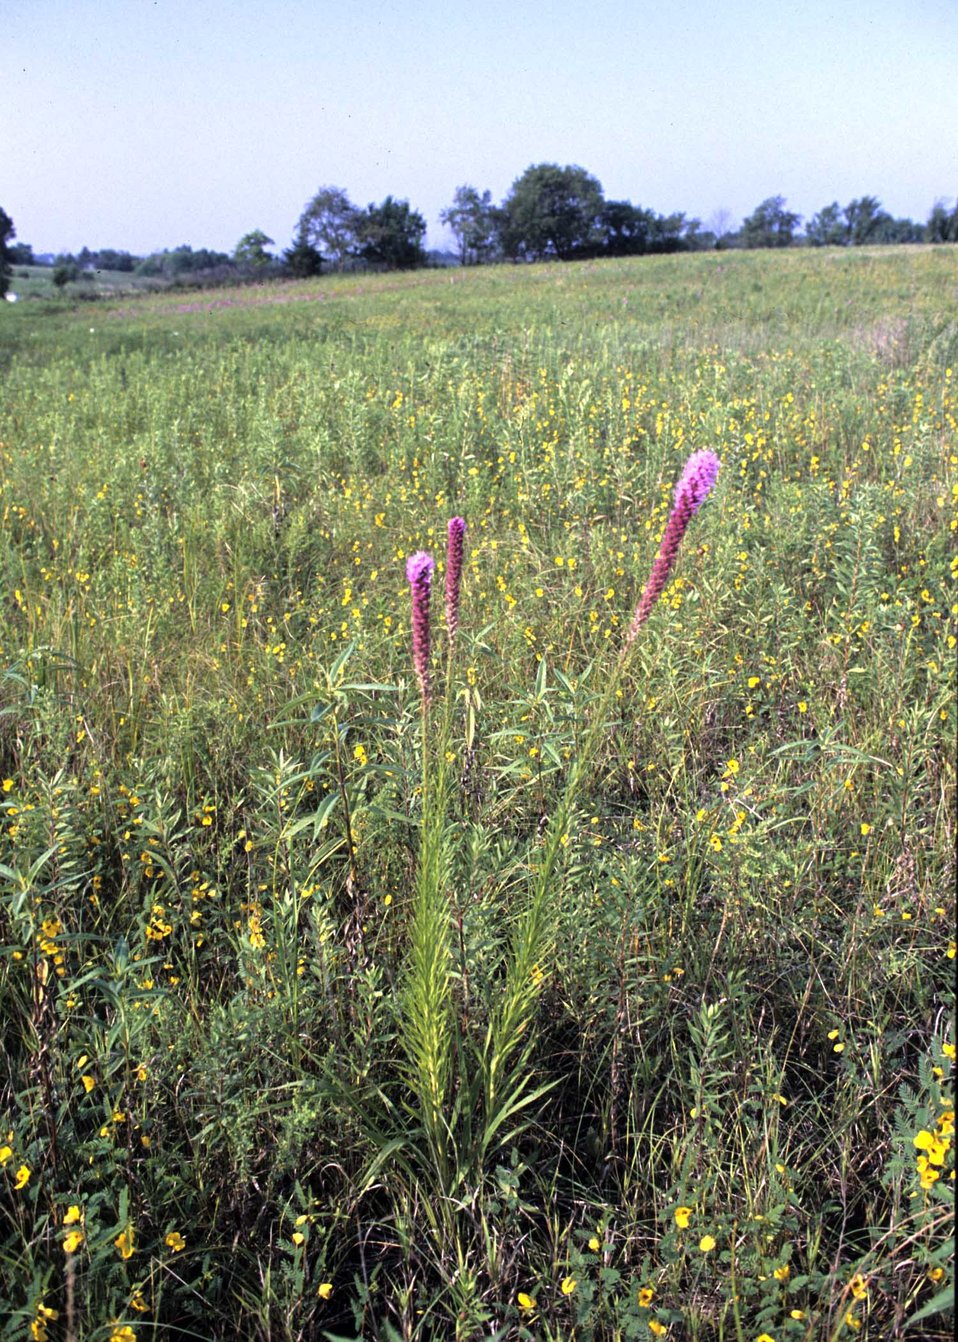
A disturbed crop field (disced) in southeast Iowa offers new growth of plants not too thick for young quail chicks to run through to escape predators.